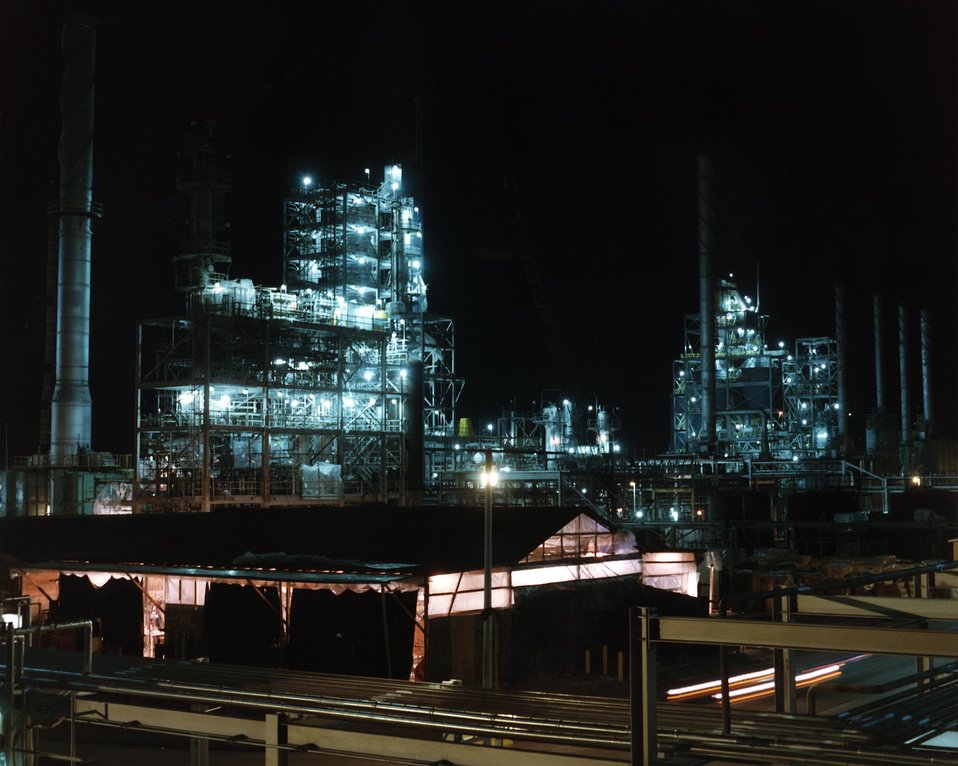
GENERAL VIEW OF THE H-COAL 600-TONS-PER-DAY PILOT PLANT LOOKING NORTHWEST.